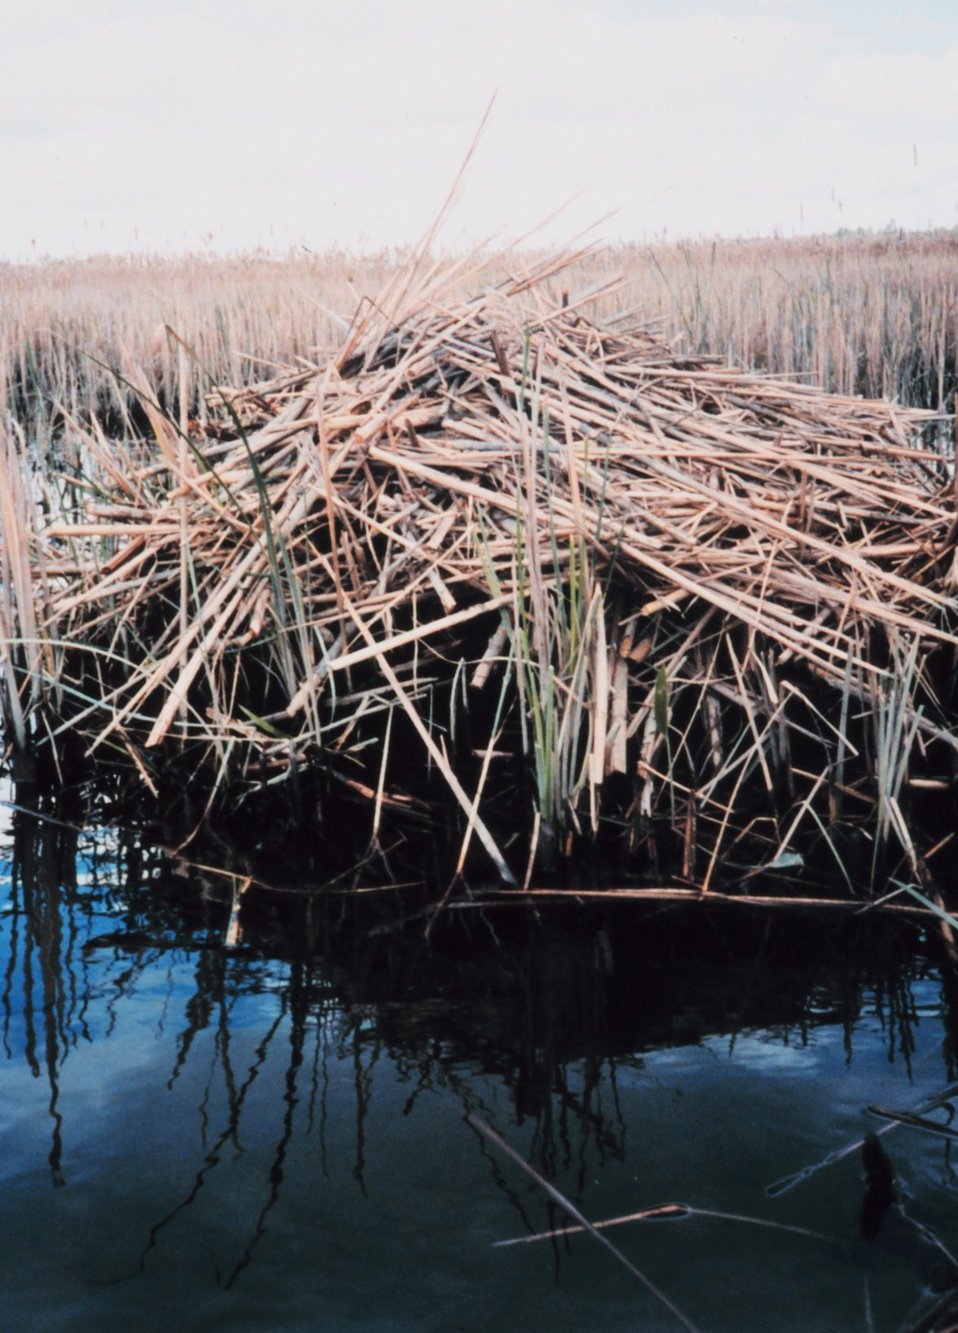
Muskrat hut